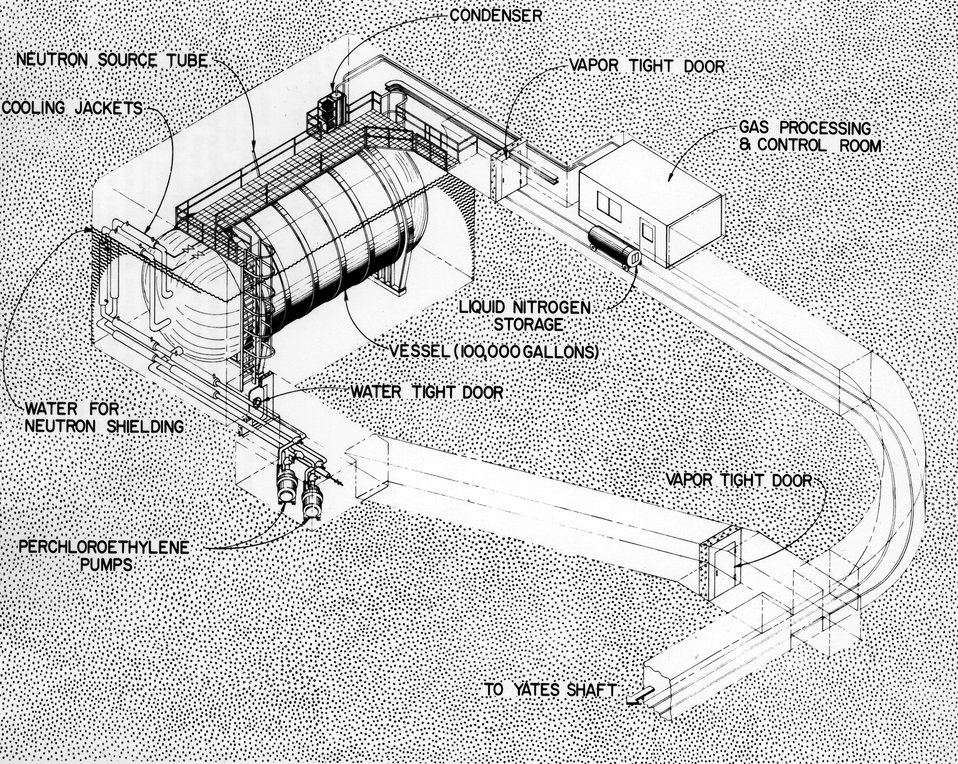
The first chemical detection of neutrinos produced by the sun have been recorded at the Atomic Energy Commission's Brookhaven National Laboratory solar neutrino detector. c. 1972